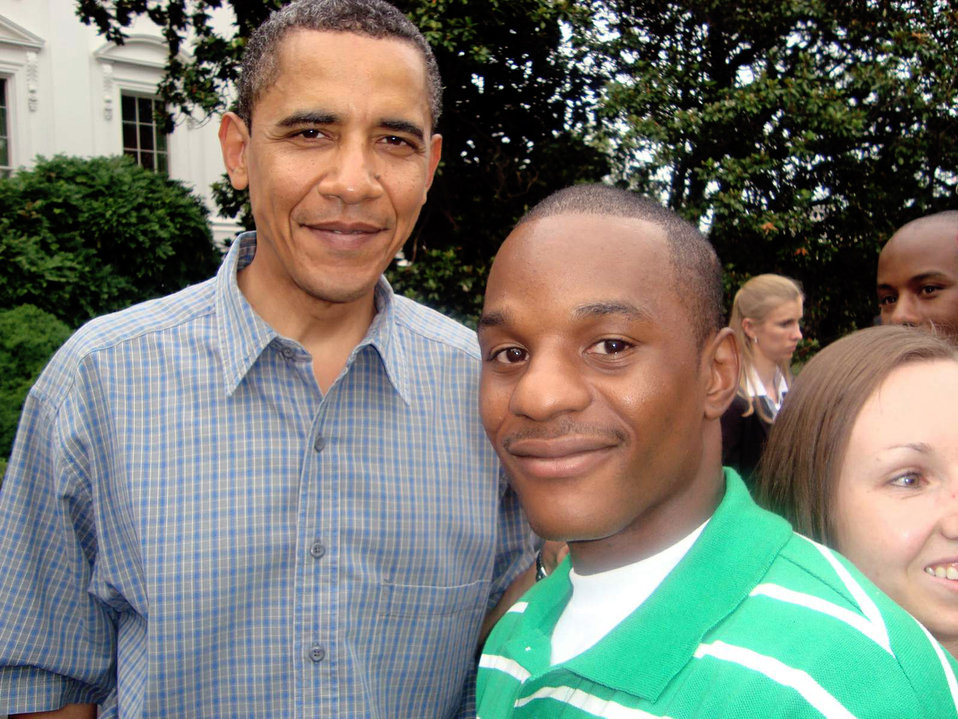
Air Force wounded warrior visits White House

Senior Airman Duane Dunlap visits with President Barack Obama during a Salute to the Military event at the White House on the Fourth of July. Airman Dunlap, a security forces journeyman assigned to the 59th Patient Squadron at Lackland Air Force Base, Texas, was one of five Airmen chosen to attend the event that included dinner, fireworks and a chance to meet President Obama and the First Lady.